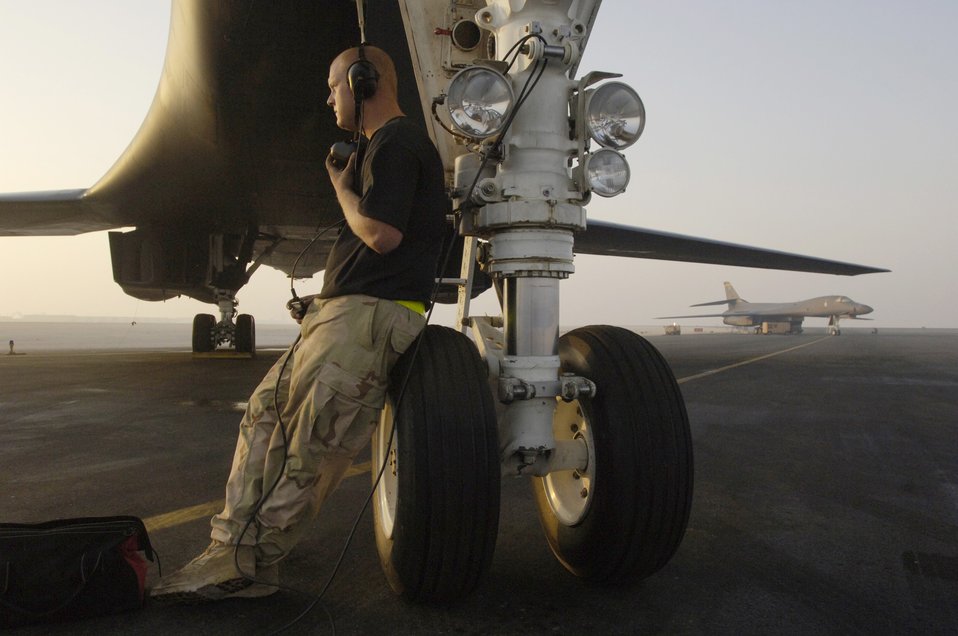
Lancer preparations

Senior Airman Phillip Larson runs through a preflight inspection next to a B-1 Lancer in Southwest Asia Sept. 28. The crew chief's tasks include observing the firing-up of four turbofan engines that expend a combined thrust of 120,000 pounds, enabling the long-range, multi-role bomber to fly at speeds exceeding 900 mph. Airman Larson is assigned to the 379th Aircraft Maintenance Squadron at a forward-operating base.